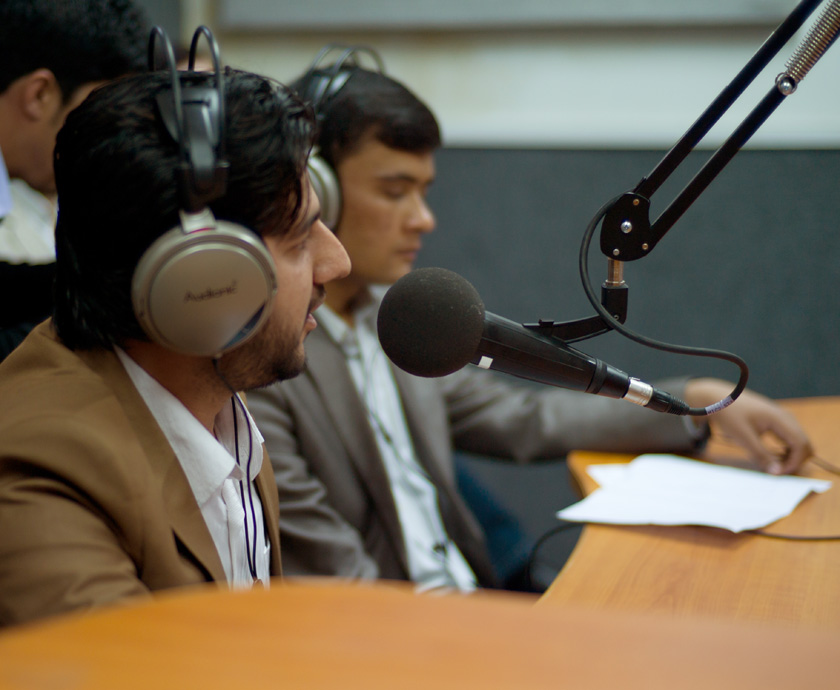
L1002744Refrigerator